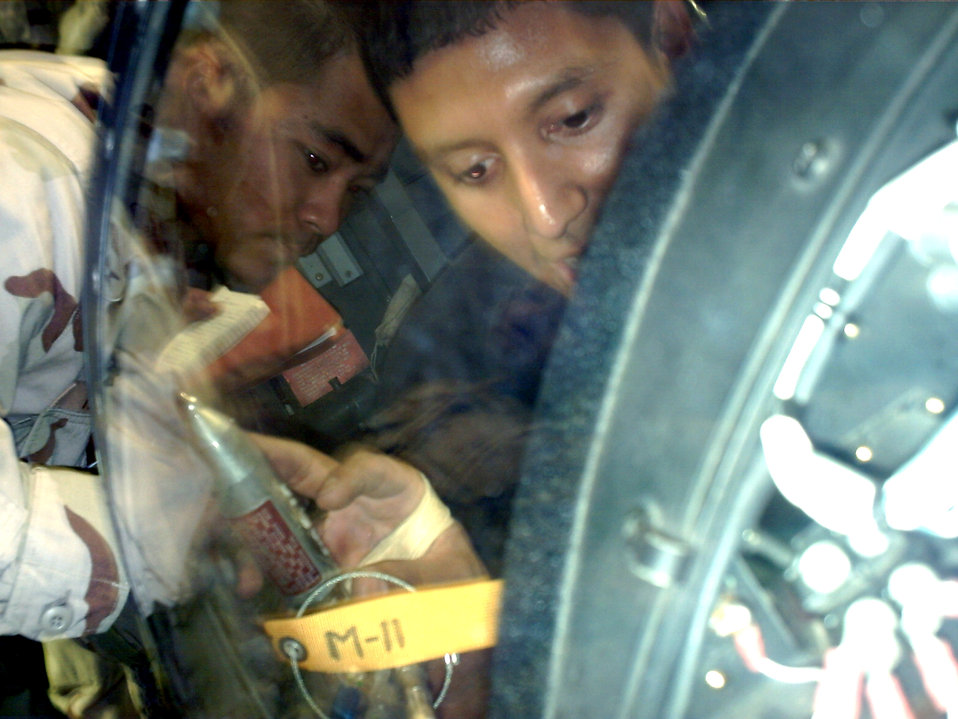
Deployed operations

Airman 1st Class Johnny Yamada (right) listens to Senior Airman Mark Hernandez Sept. 28 as he explains how to disarm the ejection seat in a U-2